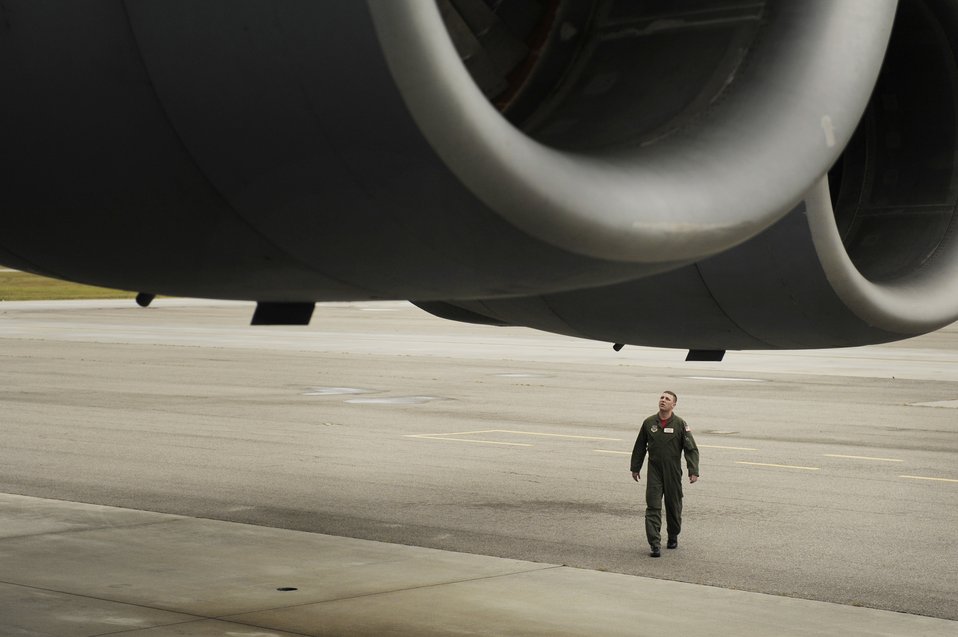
Land of the giants

Capt. Bryon Webb performs a post flight check on a C-17A Globemaster III after a local training mission at Charleston Air Force Base S.C., Nov. 13, 2009. Captain Webb is a pilot assigned to the 14th Airlift Squadron.